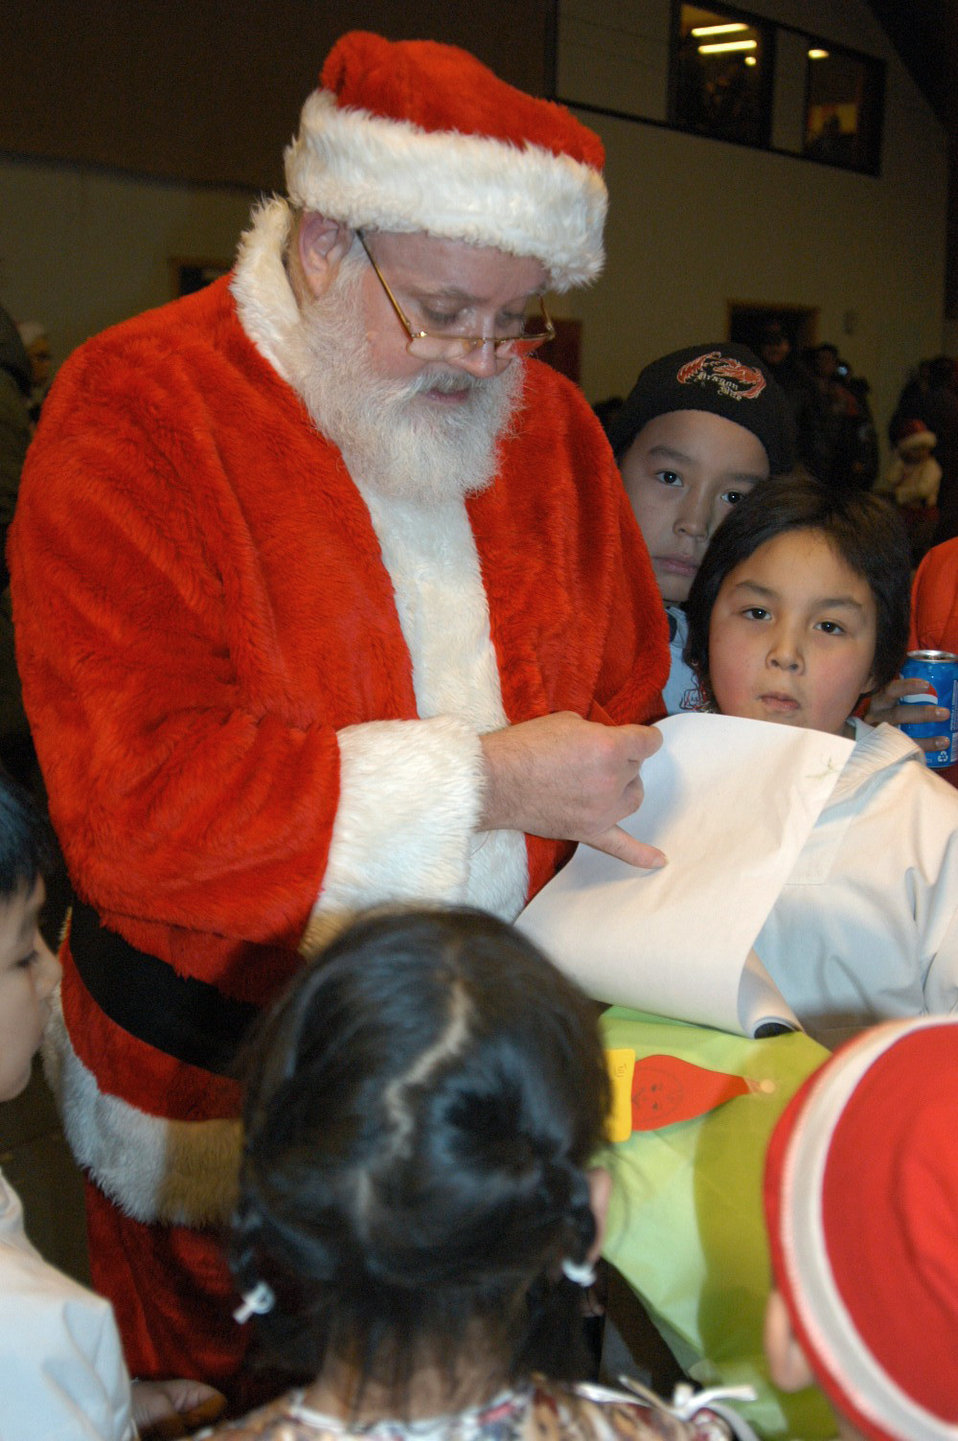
Thule Airmen bring Julemand to children

QAANAAQ, Greenland -- Santa Claus reads a book presented to the Airmen of Thule Air Base by children here.